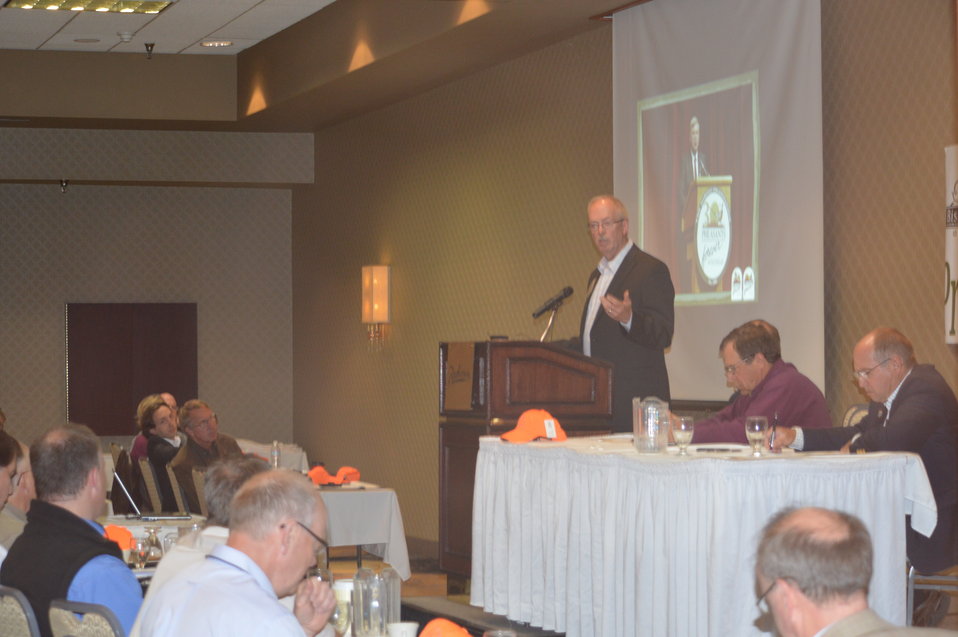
Dave Nomsen speaks at the Prairie Summit

Dave Nomsen from Pheasants Forever speaks at the Prairie Summit in North Dakota about Farm Bill Programs.